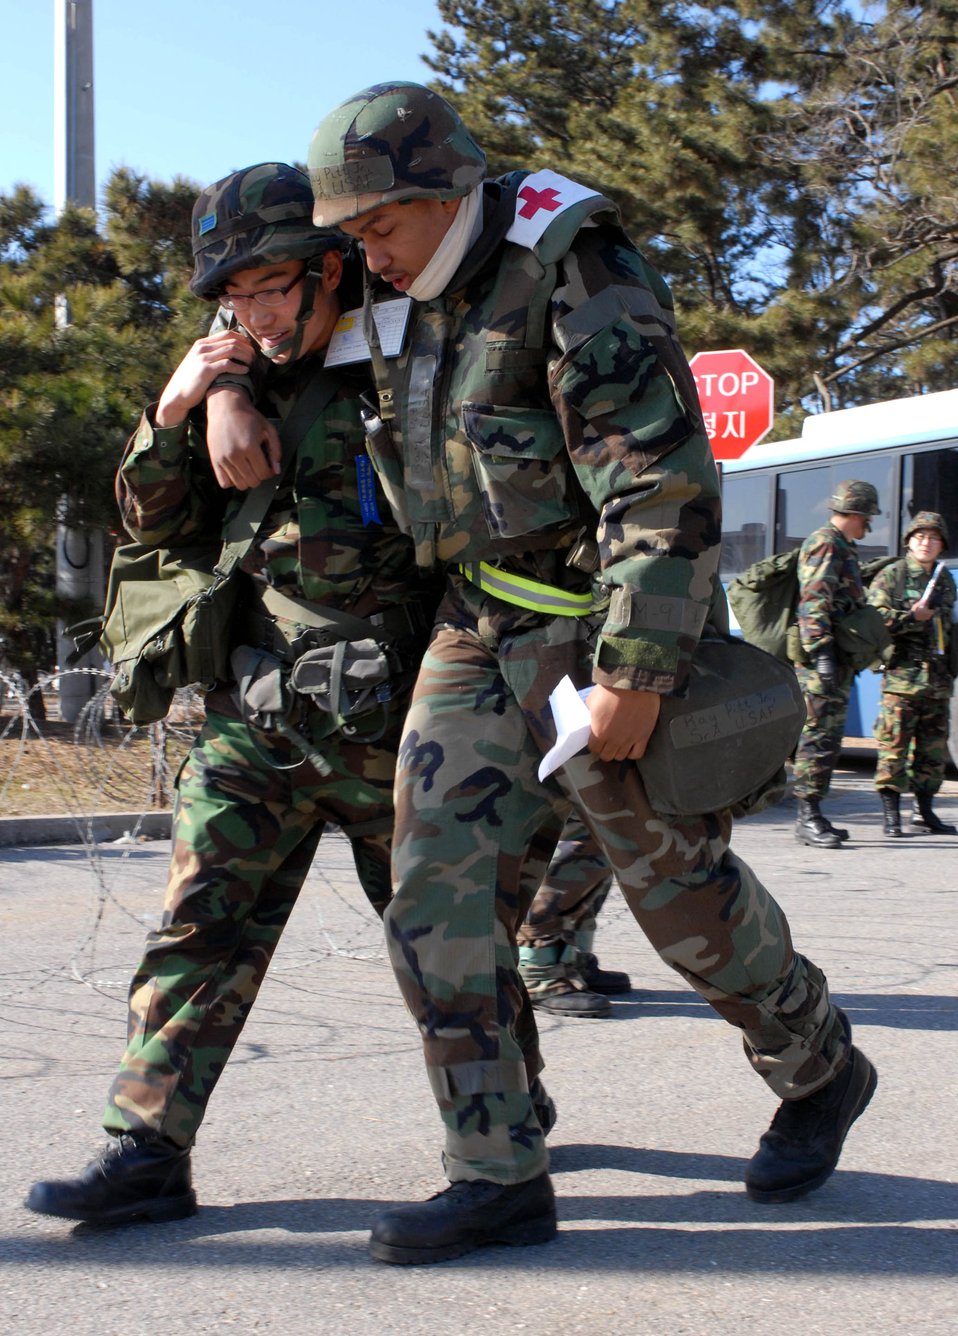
Squadron deployment tests Kunsan's readiness

A South Korea air force medic escorts Senior Airman Ray Pitt Jr., during a mass causality scenario during the peninsula-wide operations readiness exercise Jan. 16 at Kunsan Air Base, South Korea. This training scenario between the South Korea air force and 8th Medical Group Airmen and demonstrates the teamwork necessary to carry out the combined mission of the two allies stationed at Kunsan AB. Airman Pitt is assigned to the 8th Medical Group.